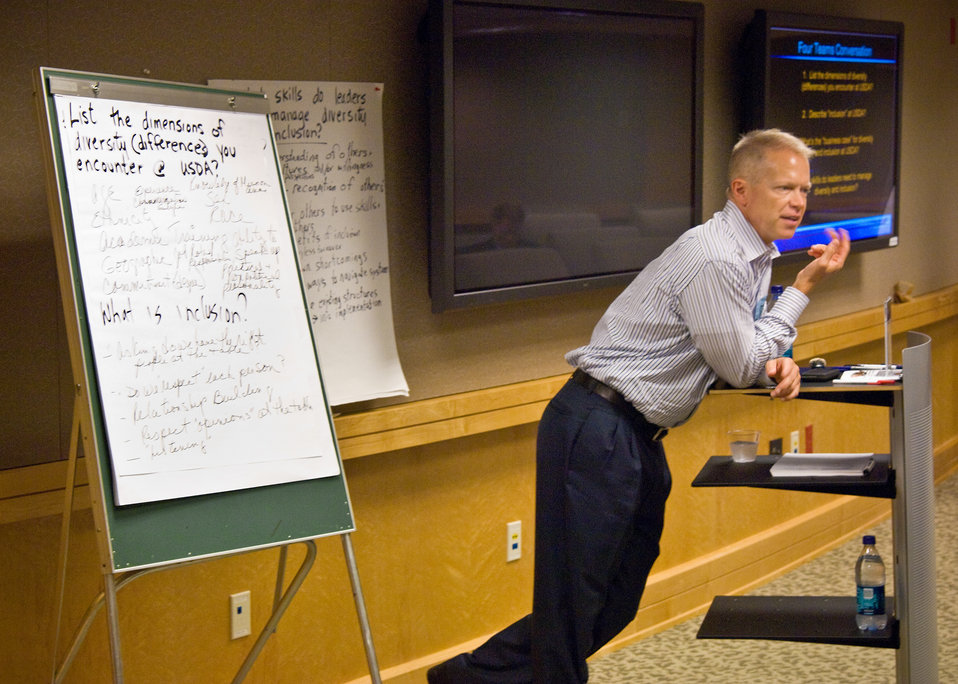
Scott Horton, Innovations International a diversity consulting business critiques the input on the easel from participants during one of many work sessions for Department of Agriculture employees during the Secretary's Transformational Training in Washington, DC, Wednesday, September 15, 2010. The transformational training is for Department of Agriculture executives, managers and employees to help improve the civil rights of clients and employees. USDA Photo 10di1492-38 by Bob Nichols.